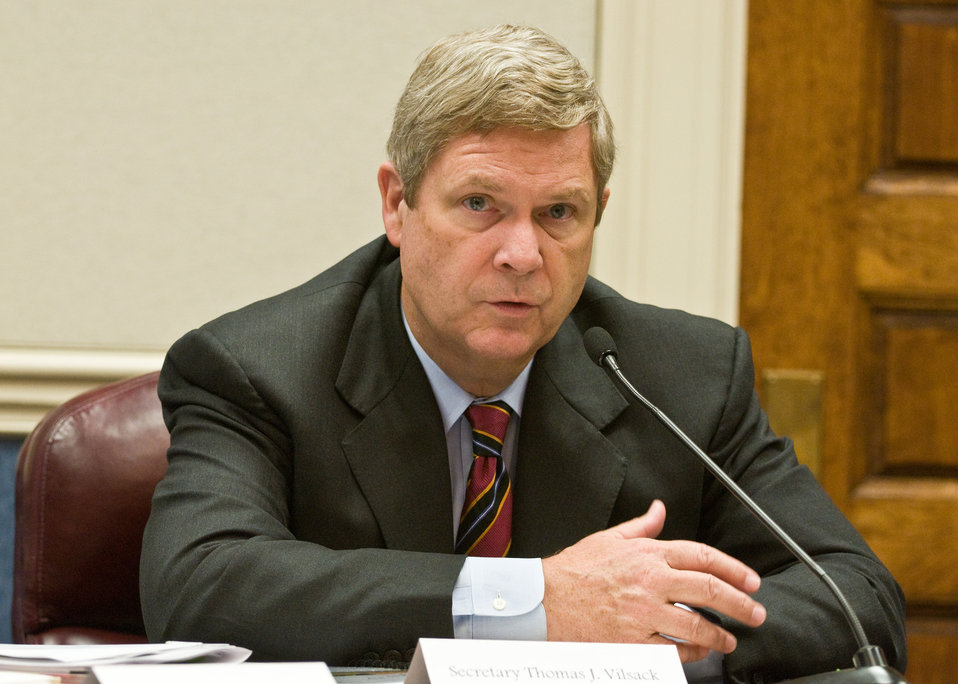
Agriculture Secretary Tom Vilsack spoke to aviation and biofuel industry executives about the United States Department of Agriculture’s development of a roadmap to meet the Biofuels Goals of the Renewable Fuels Standard at the 'Farm to Fly, Sustainable Aviation Biofuel Roundtable” at the United States Department of Agriculture in Washington, DC, Wednesday, July 14, 2010. Secretary Vilsack asked the industries to be specific about how to approach biofuels marketing, crops and rural development. USDA Photo 10di1441-003.